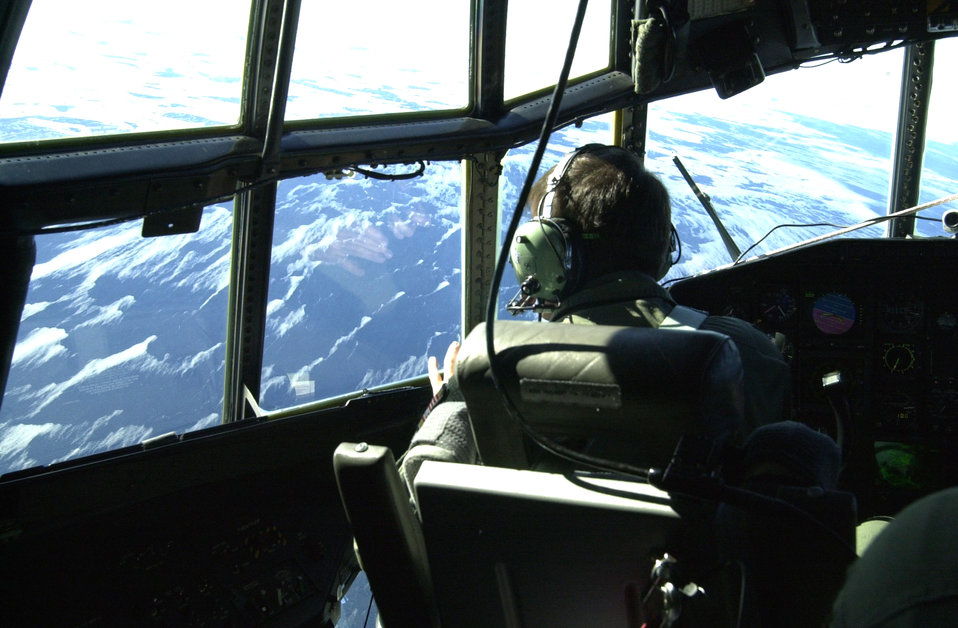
Air Guard retraces first flight to South Pole

OVER ANTARCTICA -- Maj. Mark Doll, a pilot with the New York Air National Guard's 109th Airlift Wing, looks out the window of an LC-130 Hercules over the area of Antarctica where Rear Adm. Richard E. Byrd established the Little America campsite 75 years ago. The edge of the Ross Ice Shelf and the sea ice in the area where Admiral Byrd established Little America broke off and floated away years ago. Major Doll and his crew took the long way to the pole to retrace the route of the first South Pole flight by Admiral Byrd.